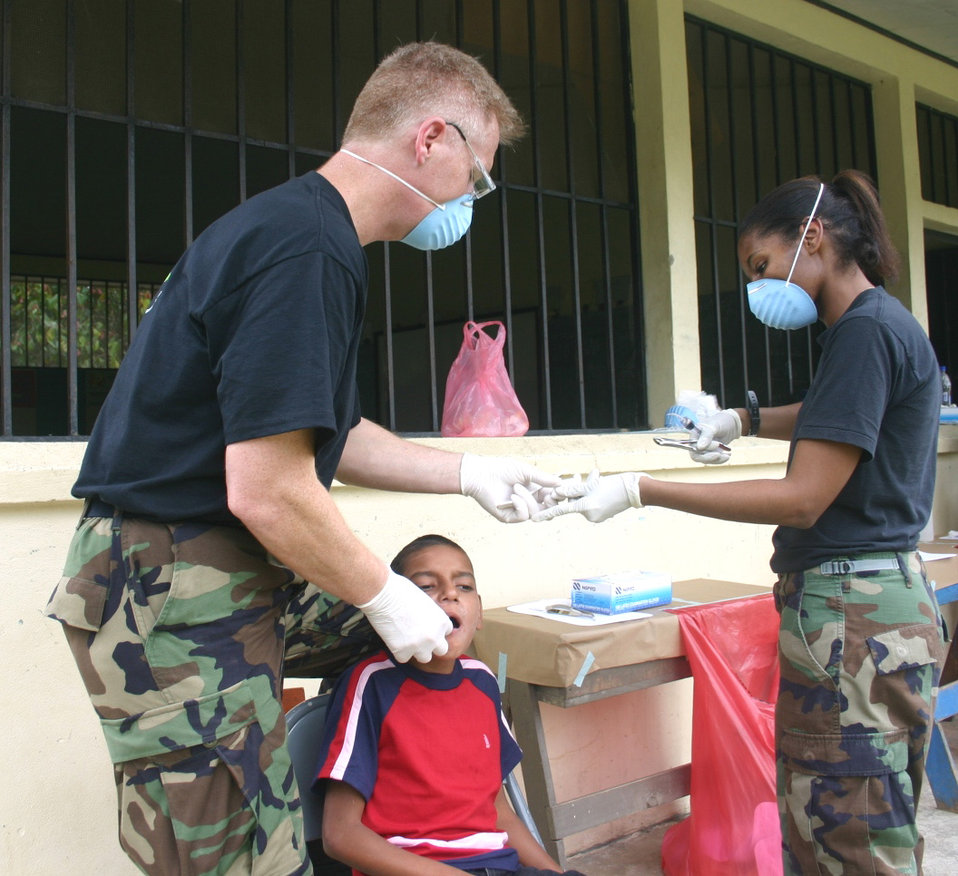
New Horizons 2006-Honduras

Staff Sgt. Monique Fontenot, dental technician, hands dental instruments to Lt. Col. (Dr.) Mark Means as he prepares to extract a Honduran boy's tooth. The dental team saw about 100 patients at the medical readiness training exercise site in El Recreo, Honduras. Sergeant Fontenot and Colonel Means are both deployed from the 96th Dental Squadron at Eglin Air Force Base, Fla.